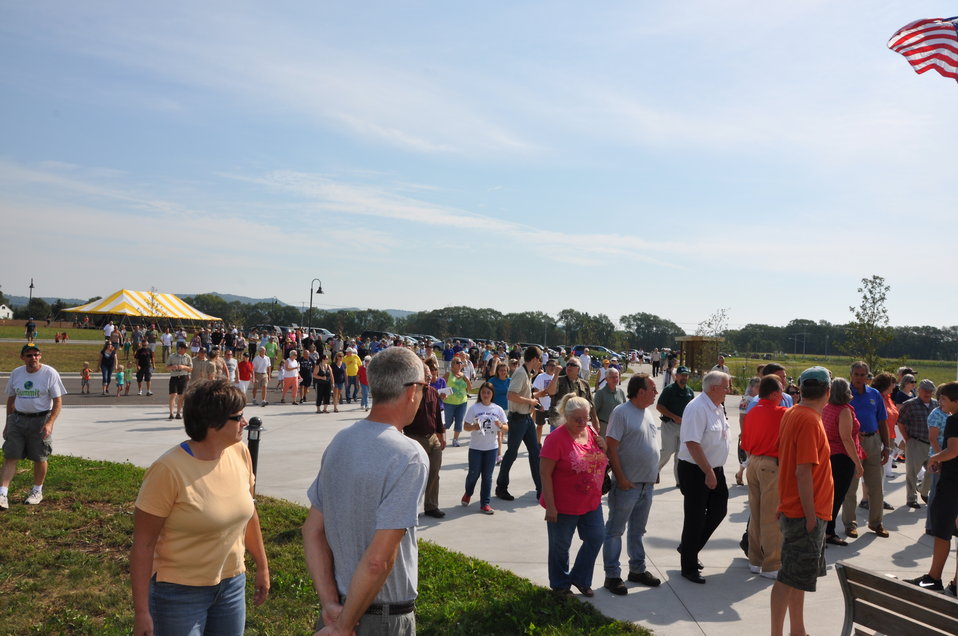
Crowd gathers for ribbon cutting